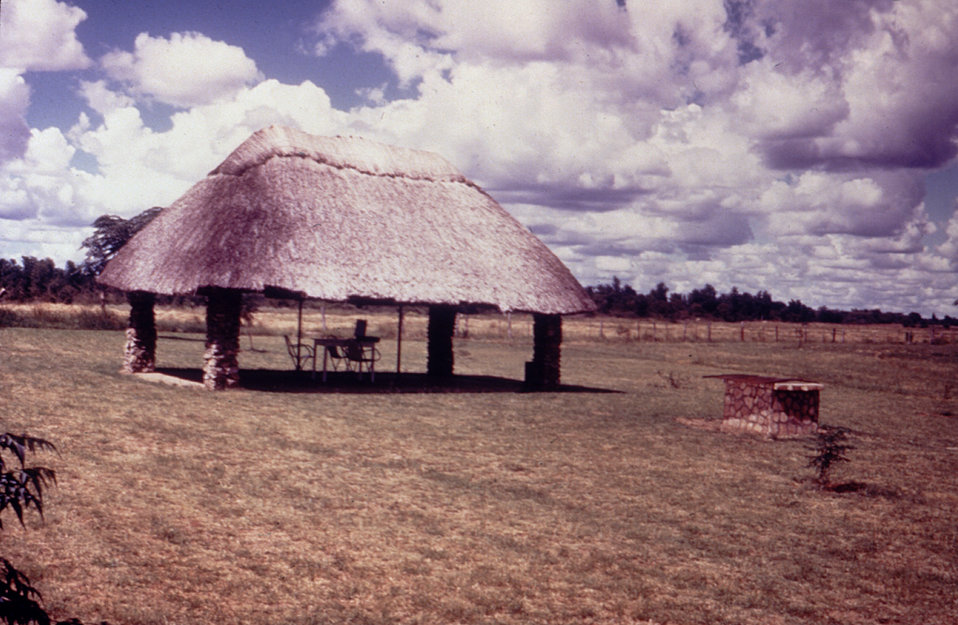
This campground picnic hut was photographed during a Marburg virus investigation in Rhodesia, or Zimbabwe after 1980.